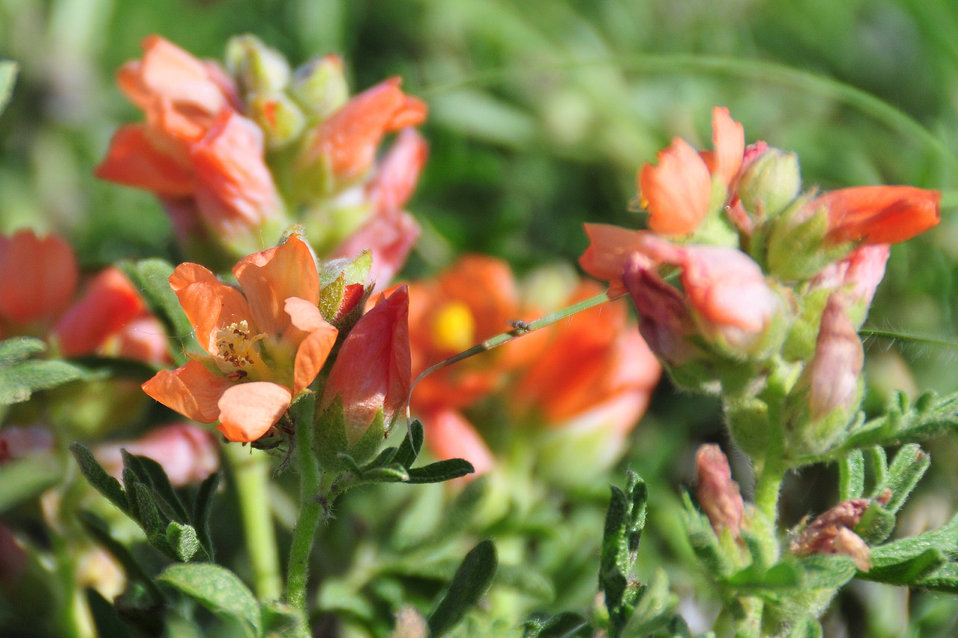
Scarlet globemallow (Spharalcea coccinea) on Mixed Grass Prairie of Lacreek NWR

Scarlet globemallow (Spharalcea coccinea) is a widely distributed wildflower. Short in stature but long in color, the scarlet to salmon colored flowers add color to the landscape.